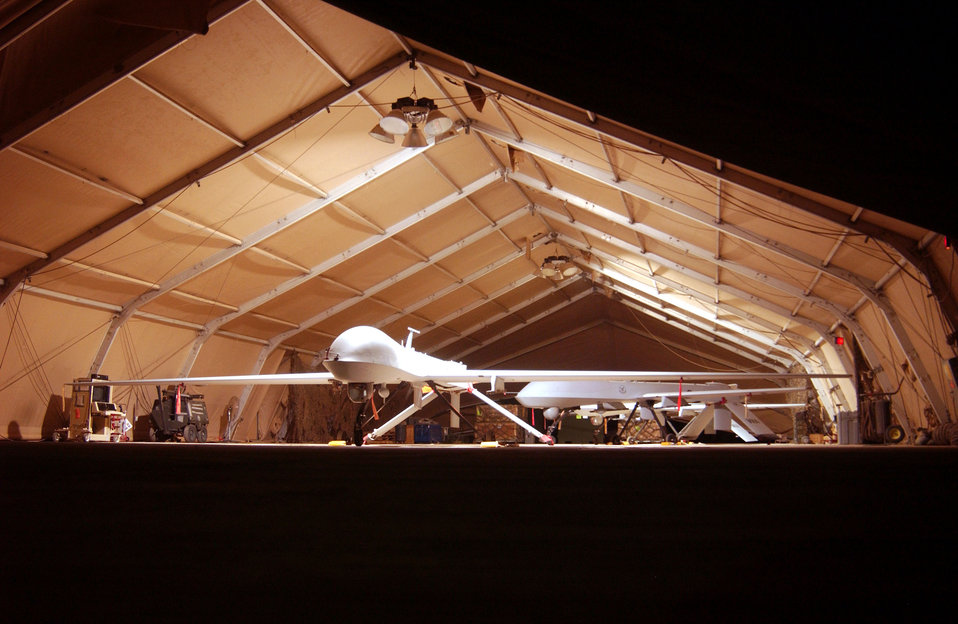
Accident report released on Predator crash

An MQ-1 Predator unmanned aerial vehicle from the 46th Expeditionary Strike and Reconnissance Squadron at Nellis Air Force Base, Nev., sits ready at Balad Air Base, Iraq, before a mission launch July 8.